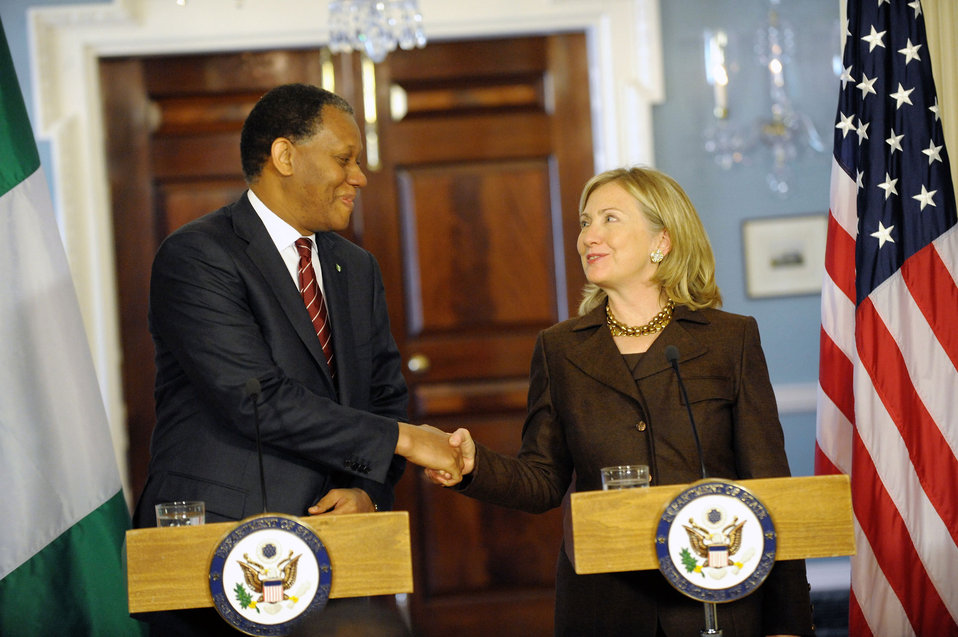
Secretary Clinton Shakes Hands With Nigerian Foreign Minister Henry Odein Ajumogobia

U.S. Secretary of State Hillary Rodham Clinton shakes hands with Nigerian Foreign Minister Henry Odein Ajumogobia after their joint press conference at the U.S. Department of State in Washington, D.C., on December 9, 2010.